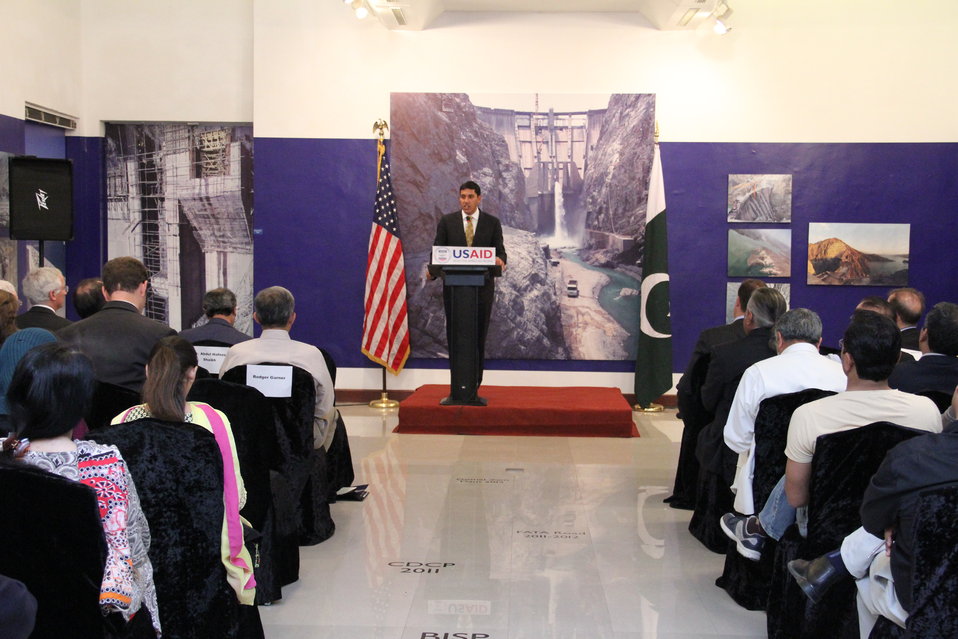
Photo Exhibition Celebrate US-PAK Cooperation at PNCA, Islamabad on April 13, 2012

Dr. Rajiv Shah, Administrator for USAID addressing the media